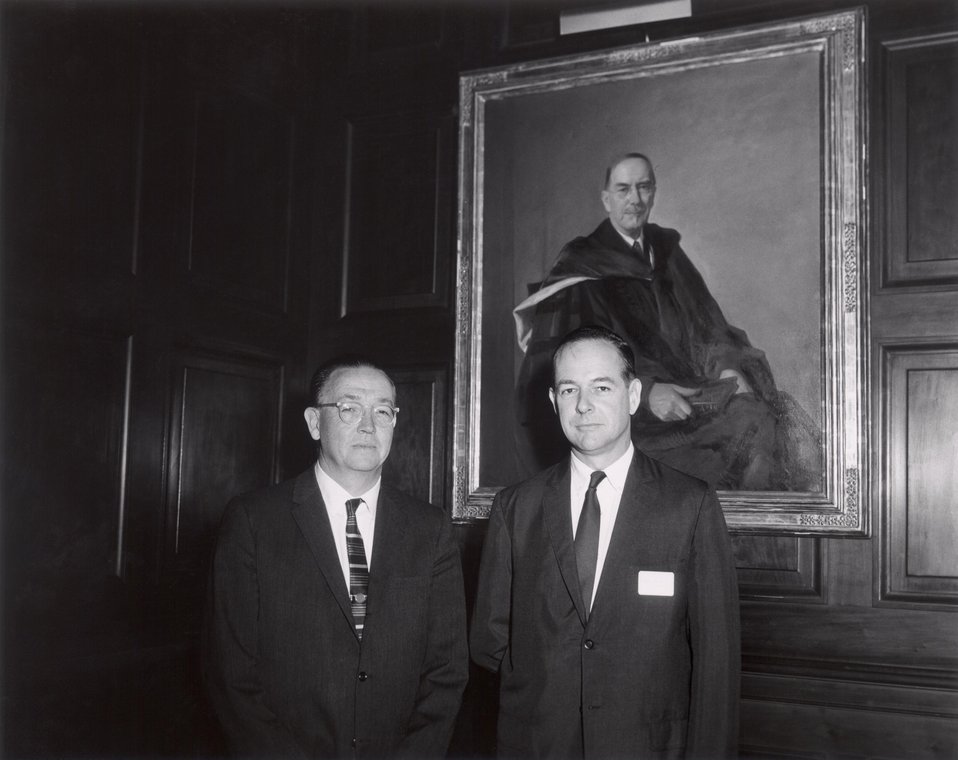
E.O. Lawrence Awards, 1967. Carnegie Institution Board Room. L- Commissioner Ramey. R- Dr. Allan F. Henry.